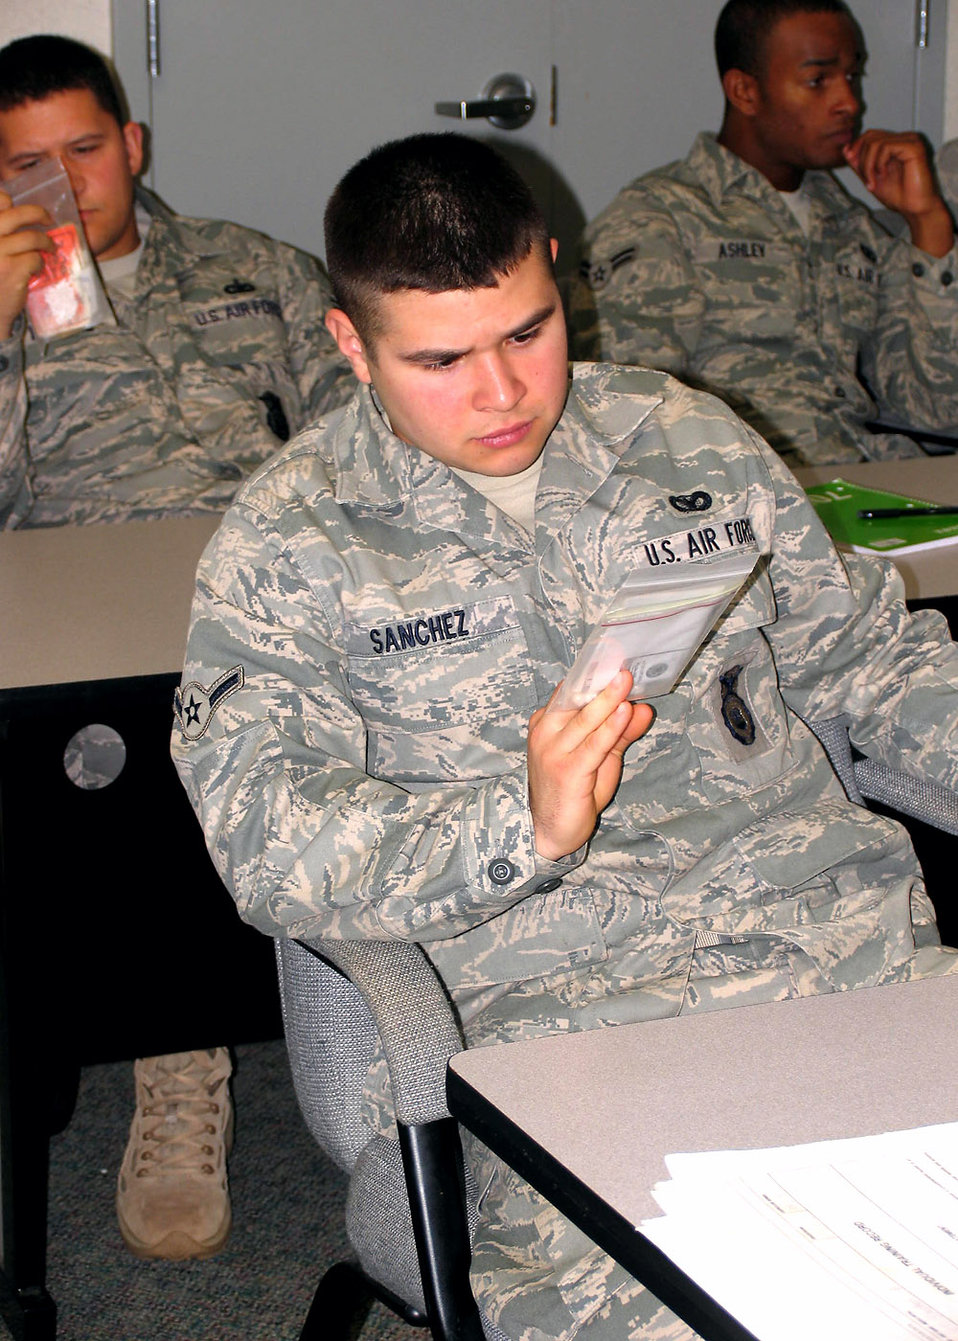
Hanscom Airmen learn how to identify drugs to fight crime

Airman Jonathon Sanchez examines a bag of Oxycontin pills that were confiscated by police officers in Saugus, Mass. A detective from the Saugus Police Department brought various drugs and drug paraphernalia Sept. 17 and 18 to Hanscom Air Force Base, Mass., to teach security forces Airmen what to look for during day-to-day patrol operations. Airman Sanchez is a 66th Security Forces Squadron patrolman.